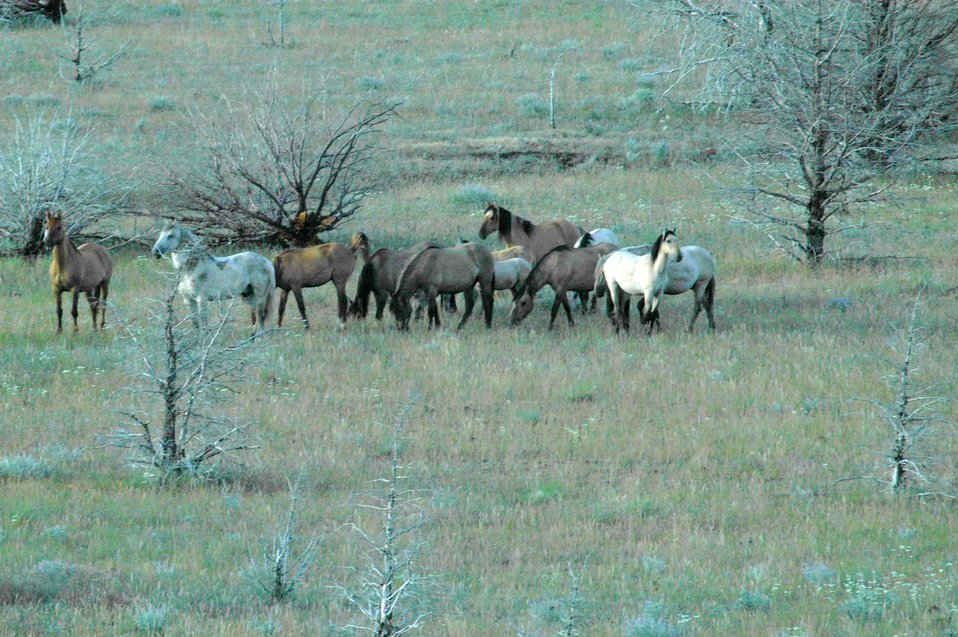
Kiger horses roam the plateaus of the Kiger Wildhorse Herd Management Area near Steens Mountain in Southeastern Oregon.